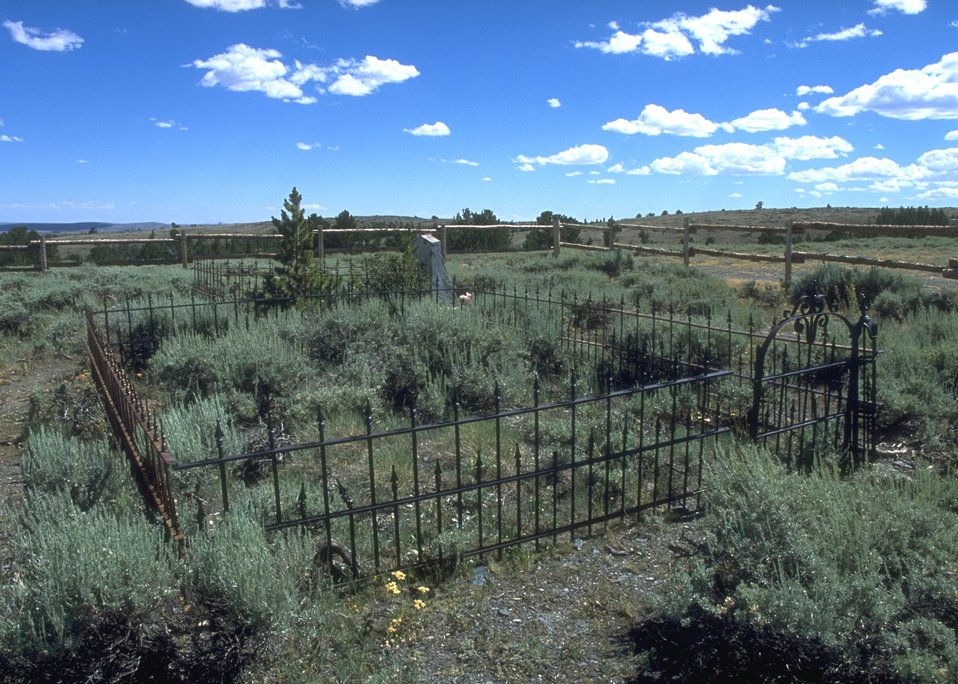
Grave yard near Miners Delight, Lander Field Office.